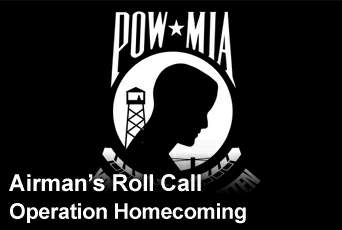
Airman's Roll Call

This week's Airman's Roll Call focuses Operation Homecoming, a highlight in Air Force history.